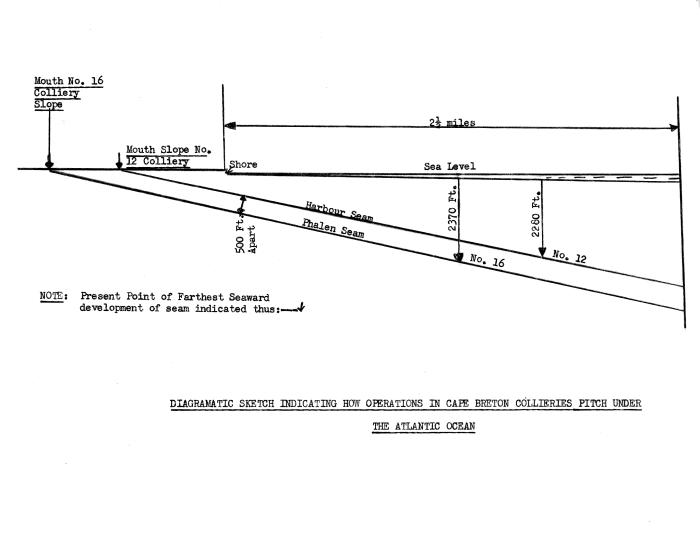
This image was provided by the Center for Disease Control's (CDC), National Institute for Occupational Safety and Health (NIOSH). This diagram depicted the layout of the pitch of the now closed Cape Breton, Nova Scotia colliery, as it passed beneath the Atlantic Ocean.